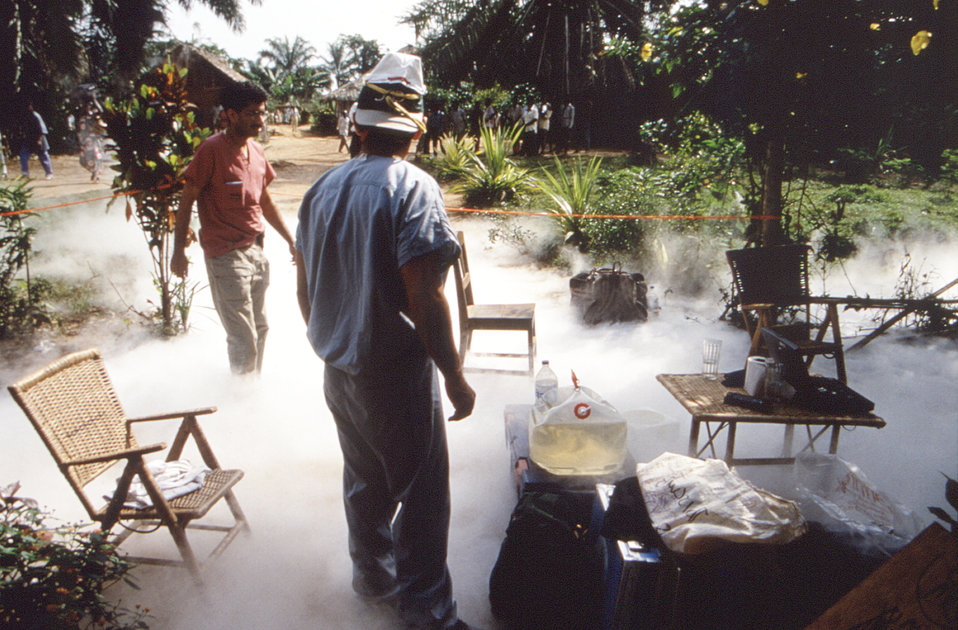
This image was created during an investigation into an outbreak of monkeypox, which took place in the Democratic Republic of the Congo (DRC), 1996 to 1997, formerly Zaire. In this particular view, epidemiologists Ali Khan, M.D. and R. Joel Williams, D.V.M. were walking through what they fondly termed, 'the fog of war', as they were off-gassing excess liquid nitrogen.